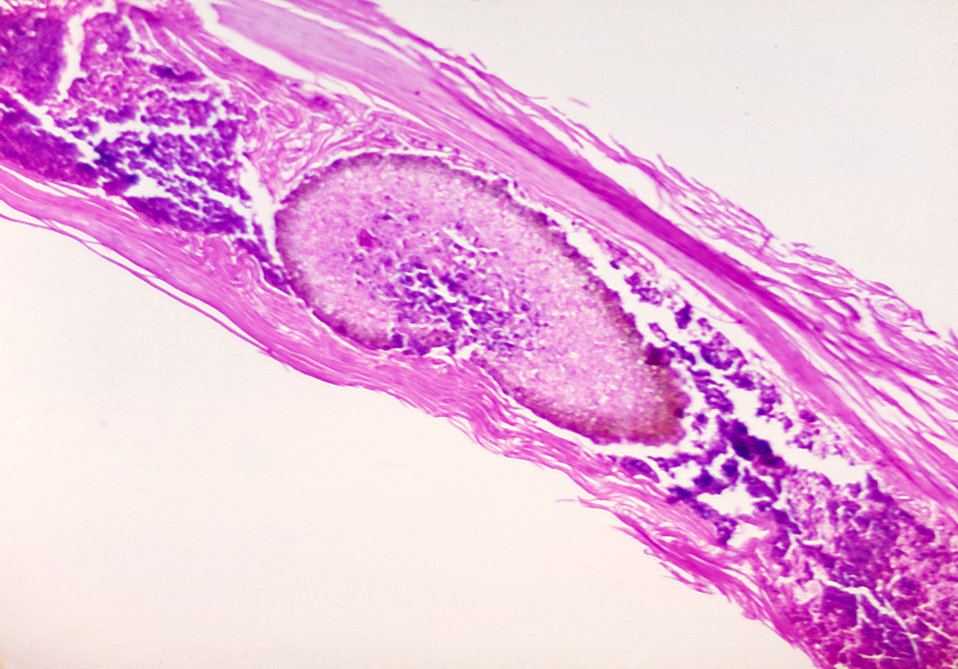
This slide depicts the histopathologic changes associated with 'black grain' mycetoma due to Madurella grisea.